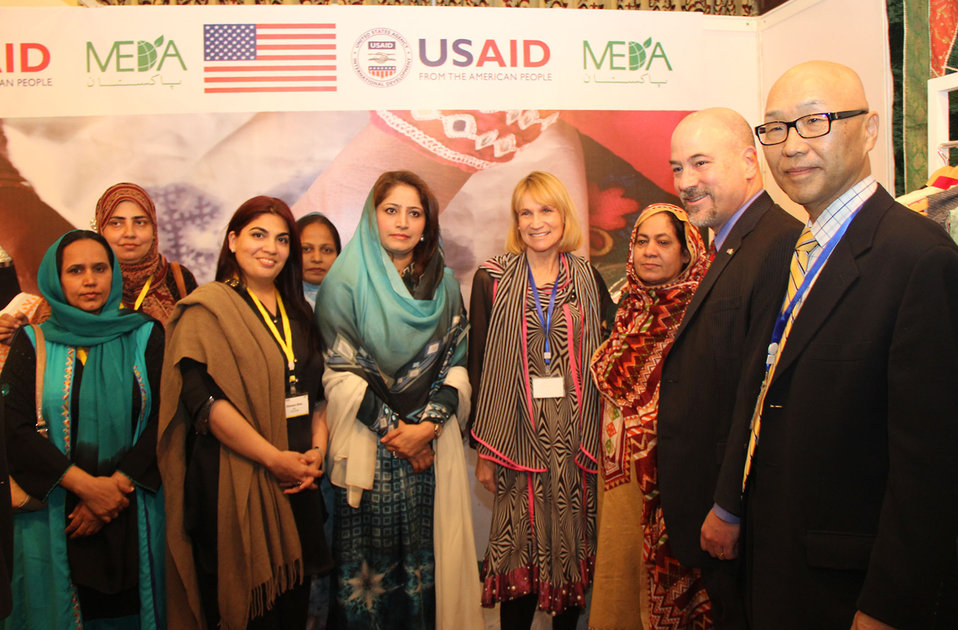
USAID’s Entrepreneurs Project

Ms. Rubina Sadaat Qaimkhani, Minister for Women Development and USAID Deputy Mission Director, Sindh interacting with rural women hand embellishers at Pakistan Hand Embellished Fabrics Industry Conference organized by USAID’s Entrepreneurs Project